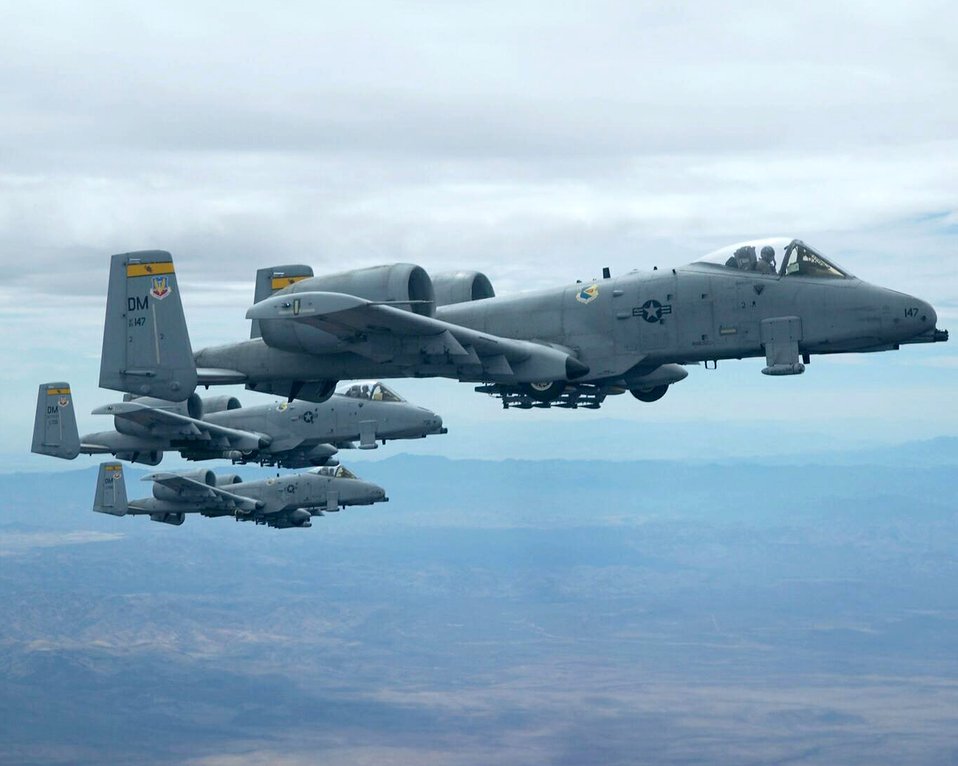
Fueled and ready

Three A-10 Thunderbolt IIs fly in formation over Tucson, Ariz., Friday, April 14, 2006, as they wait to receive an air refueling from a KC-135E Stratotanker as part of a training mission. The A-10s are assigned to the 358th Fighter Squadron at Davis-Monthan Air Force Base, Ariz.